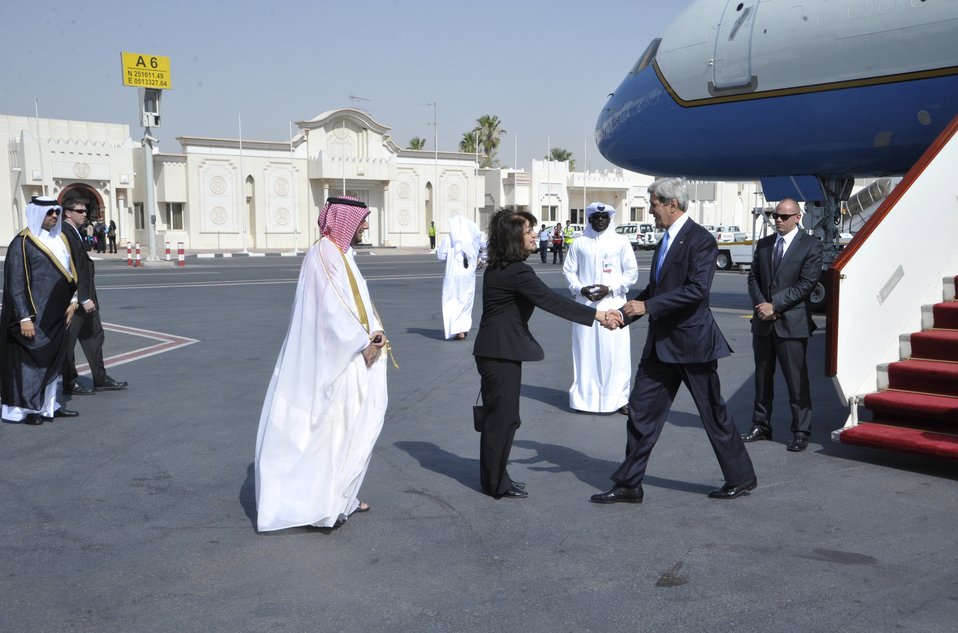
Secretary Kerry Arrives in Qatar

U.S. Secretary of State John Kerry greets U.S. Ambassador to Qatar Susan Ziadeh upon his arrival in Doha, Qatar on June 22, 2013.